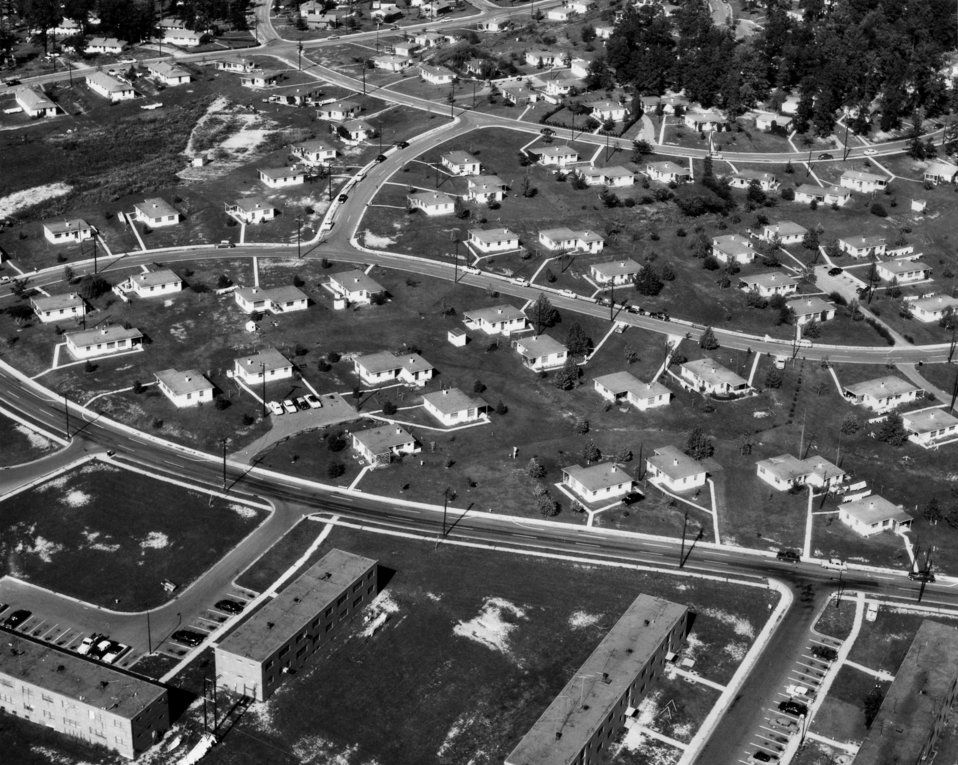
Woodland Residential Section Air View Oak Ridge 1955

55-889 DOE photo Ed Westcott 10-3-1955 Oak Ridge Tennessee